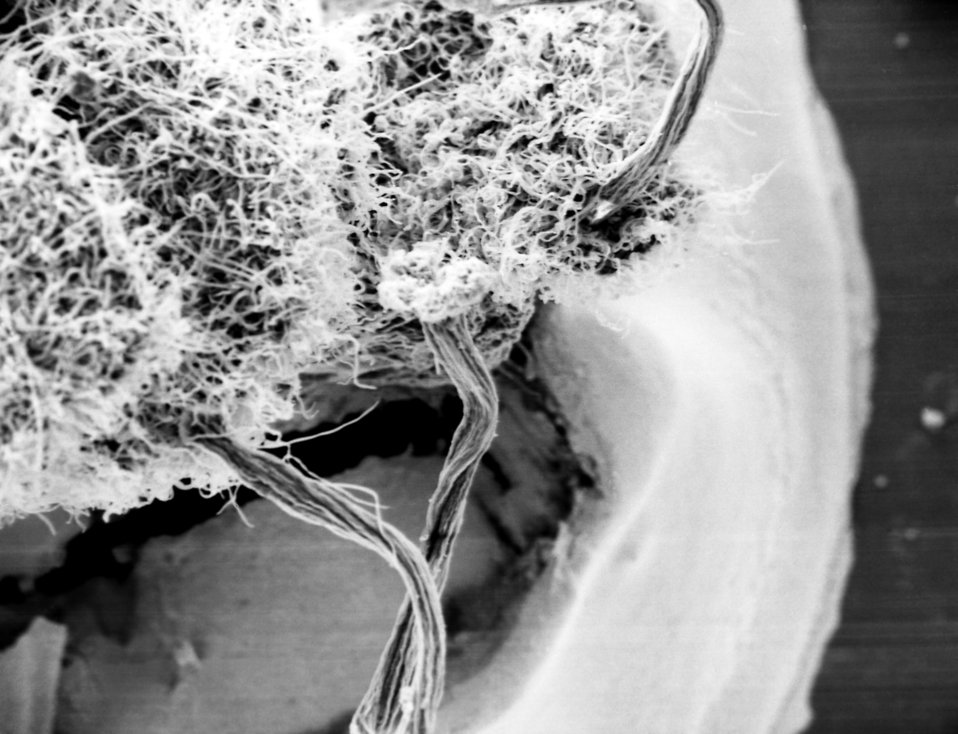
This scanning electron micrograph (SEM) shows the surface topography of a red raspberry drupelet, Rubus strigosus.